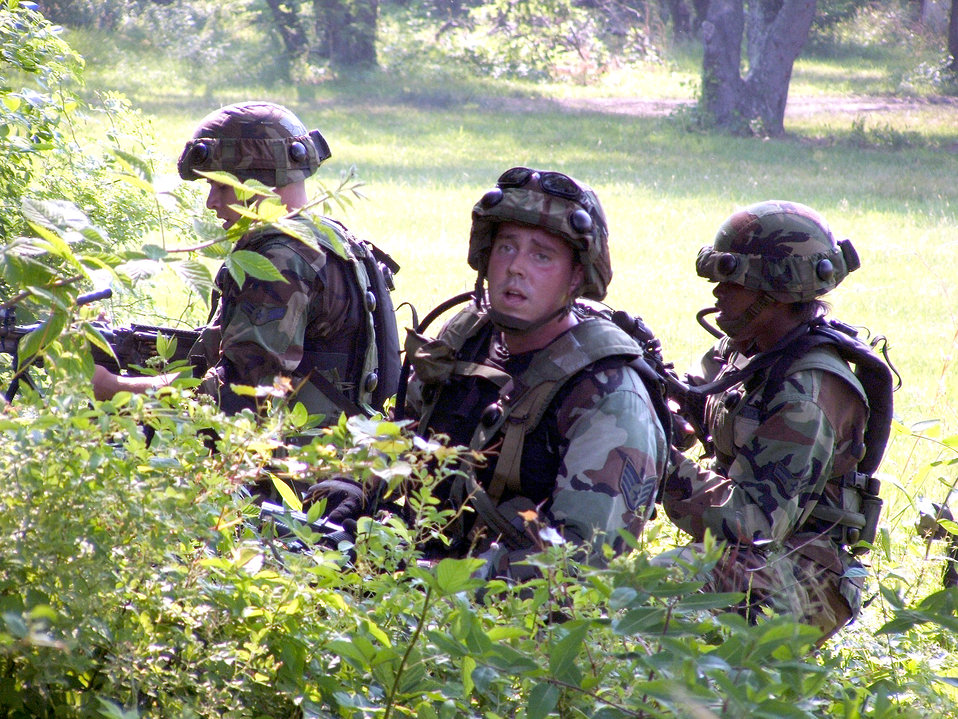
Preparing for deployment

Airmen attending the Air Force Integrated Contingency Skills Training Course 06-4 at Fort Dix, N.J., respond to a scenario in combat patrol and tactics on Monday, June 19. More than 165 students are participating in the two-week training to prepare for deployments. The course is taught by instructors from the Air Mobility Warfare Center's 421st Combat Training Squadron.